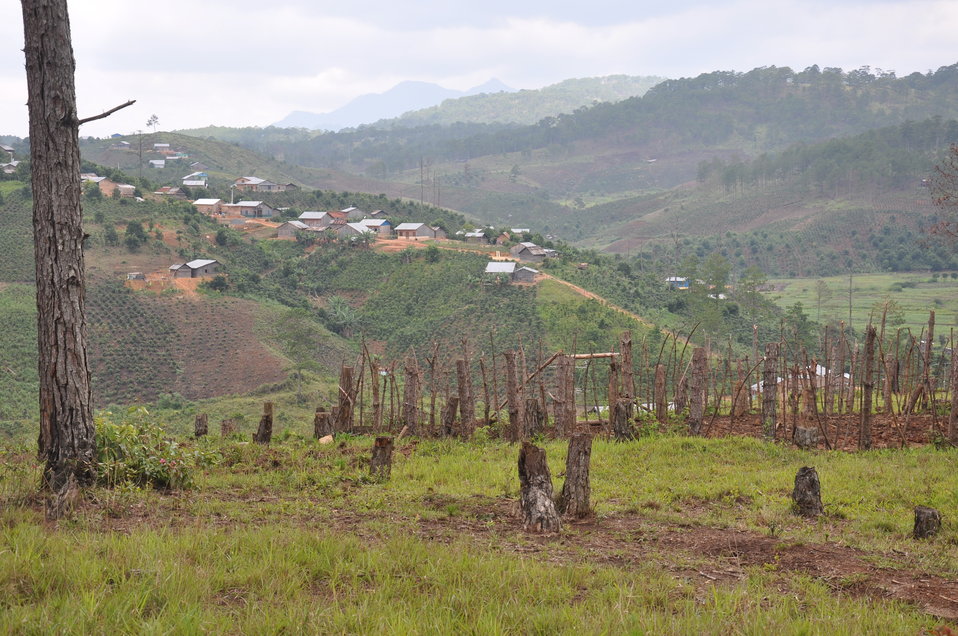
Forests in Vietnam